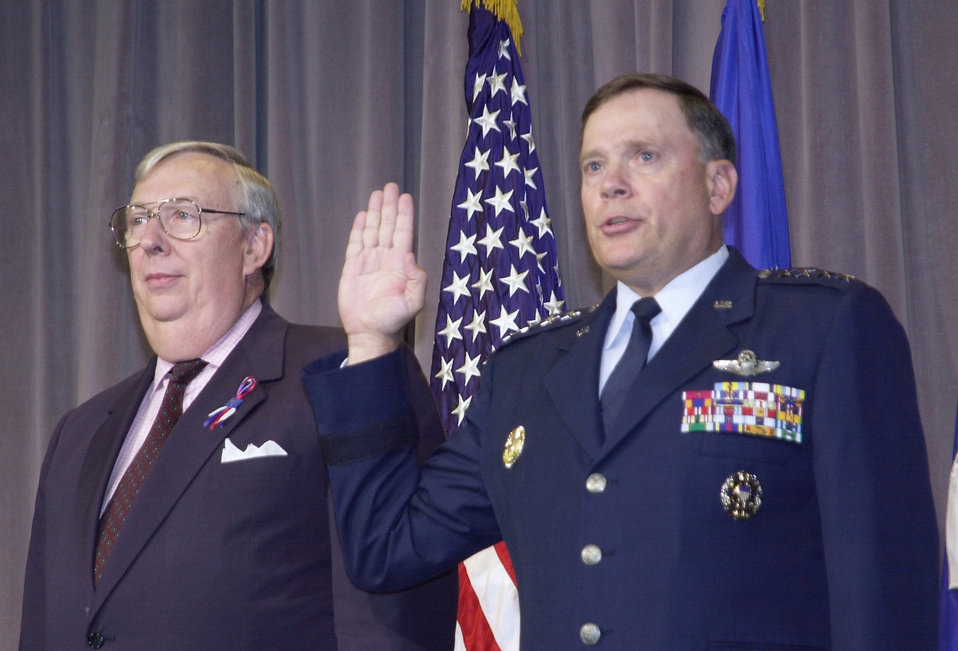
The oath

WASHINGTON -- In honor of the Air Force's 54th anniversary, Chief of Staff of the Air Force Gen. John P. Jumper administers the oath of appointment to 54 airmen, ranging in ranks from senior airman to chief master sergeant, gathered in the Pentagon auditorium for a special reenlistment ceremony on Sept. 17, 2001. Co-host Secretary of the Air Force Dr. James G. Roche then presented his coin to each of the reenlistees.